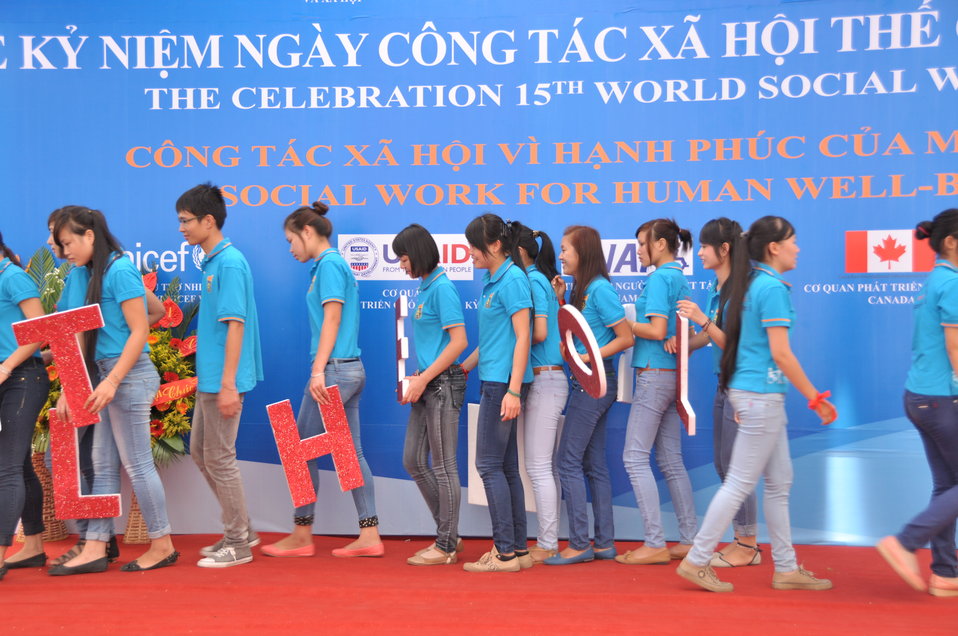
USAID Supports Social Work Education

Photo: @USAIDVietnam, November 9, 2012